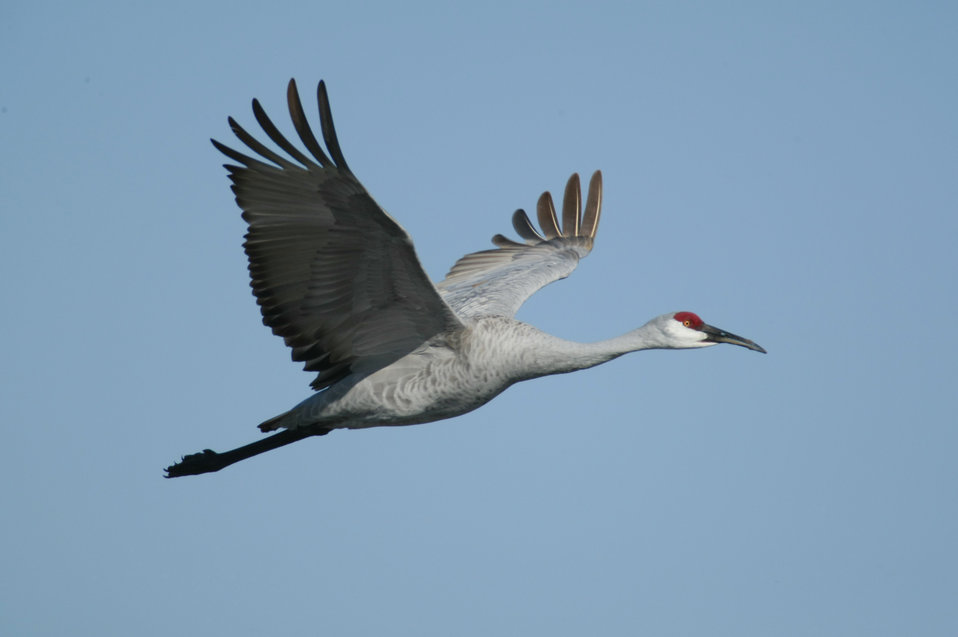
Sandhill Crane (Grus canadensis) from the Observation deck, Sacramento River NWR, Dayton, CA